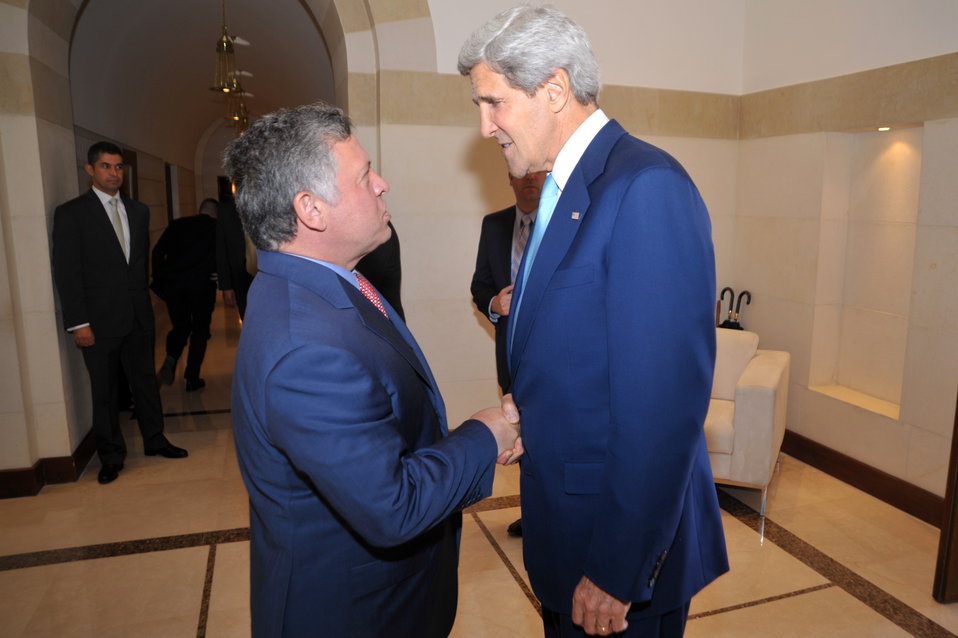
Secretary Kerry Meets With King Abdullah II

King Abdullah II greets U.S. Secretary of State John Kerry upon his arrival at Al Hummar Palace in Amman, Jordan, on July 17, 2013.